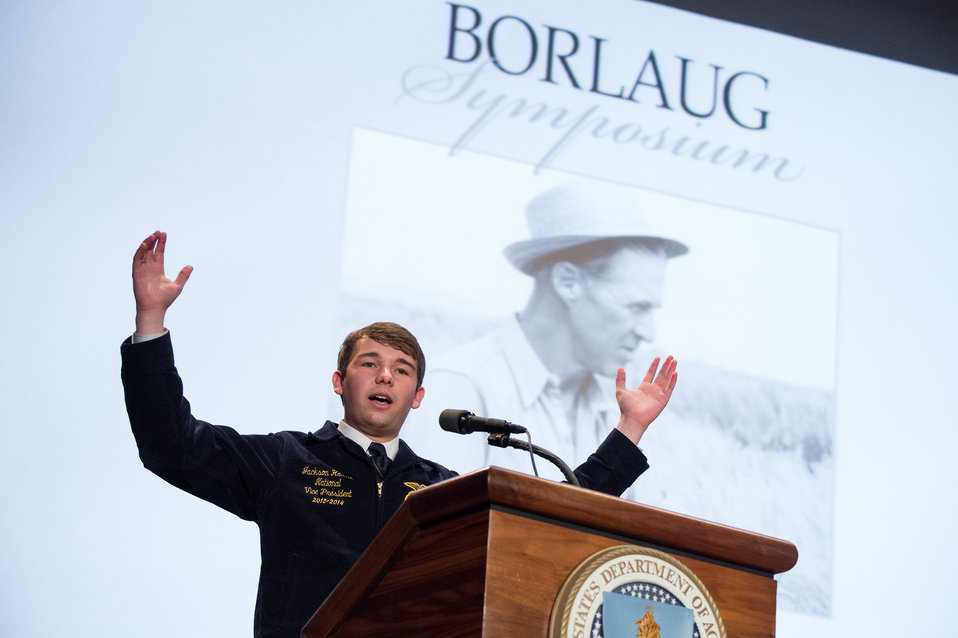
National FFA Southern Region Vice President Jackson Harris presents his work to help achieve Dr. Borlaug’s vision as the next generation of hunger fighters at the Borlaug Symposium at the Borlaug Symposium commemorating the late Dr. Norman E. Borlaug's 100th Birthday hosted by the U. S. Department of Agriculture (USDA) in the Jefferson Auditorium of USDA in Washington, D.C. on Tuesday, Mar. 25, 2014. The symposium highlighted current efforts addressing global hunger.